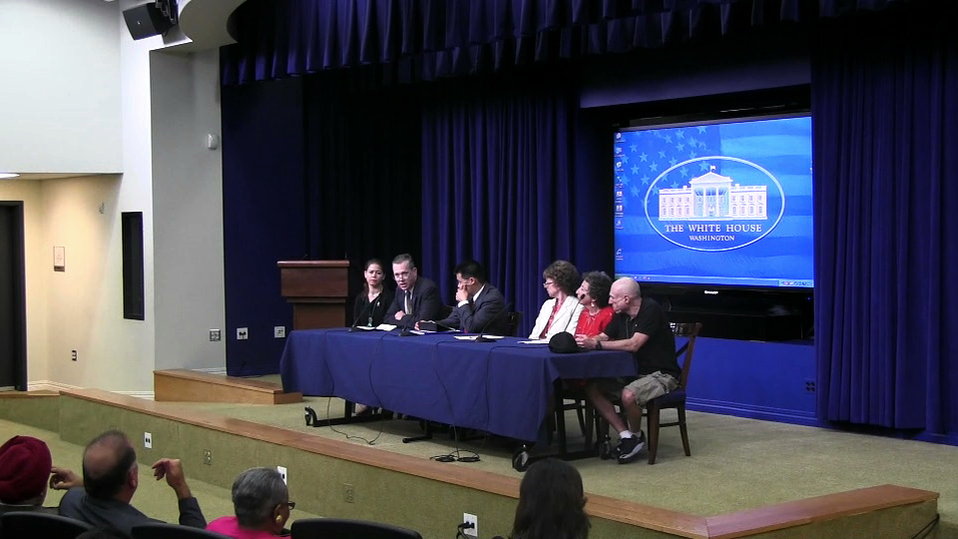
WHDpanel